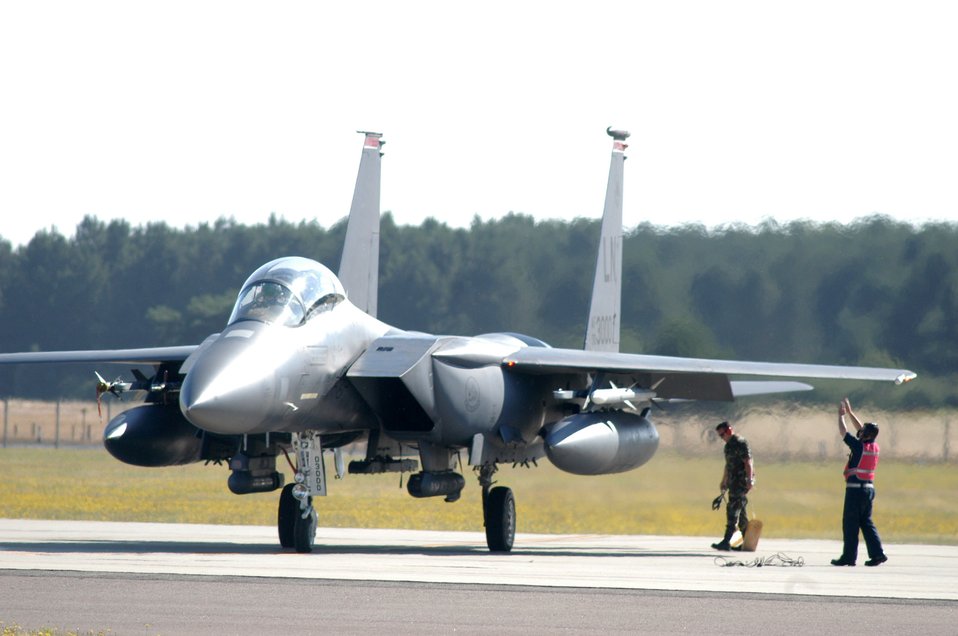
Lakenheath tests small-diameter bombs

A modified F-15E Strike Eagle, assigned to the 494th Fighter Squadron, launched on an operational training mission from Royal Air Force Lakenheath, England, on Monday, July 10, with the bomb release unit-61. The aircraft was one of four to participate in the first training mission with the new technology. The BRU-61 carries the newest small-diameter bomb, the guided bomb unit-39, into battle when the unit deploys in September.